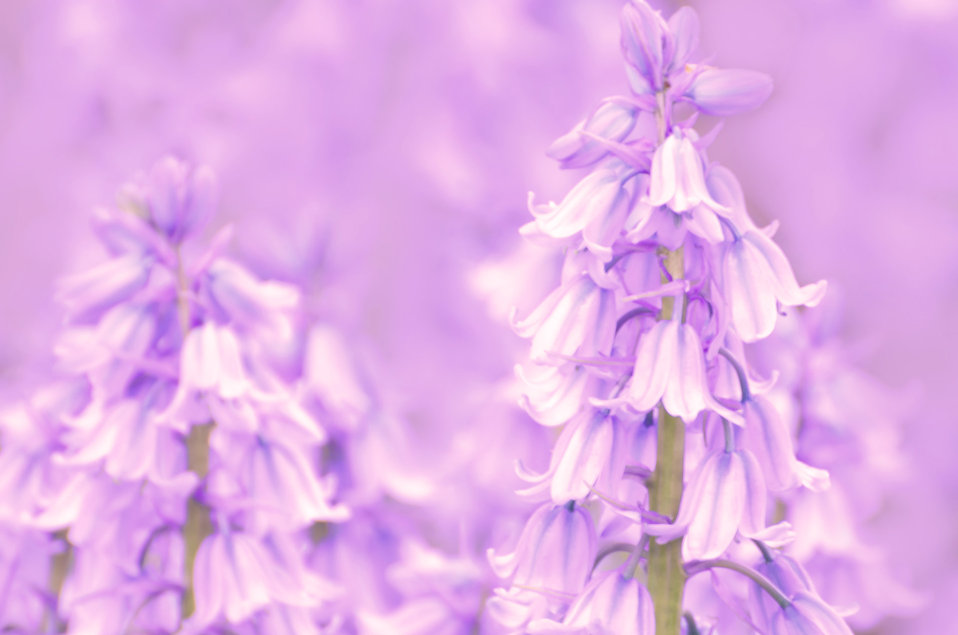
Flower

Summer flowers.